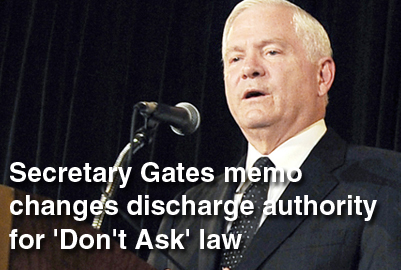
Airman's Roll Call: PCS policy changes

The Air Force has modified two permanent change of station policies to give Airmen more flexible assignment options and better force development opportunities.